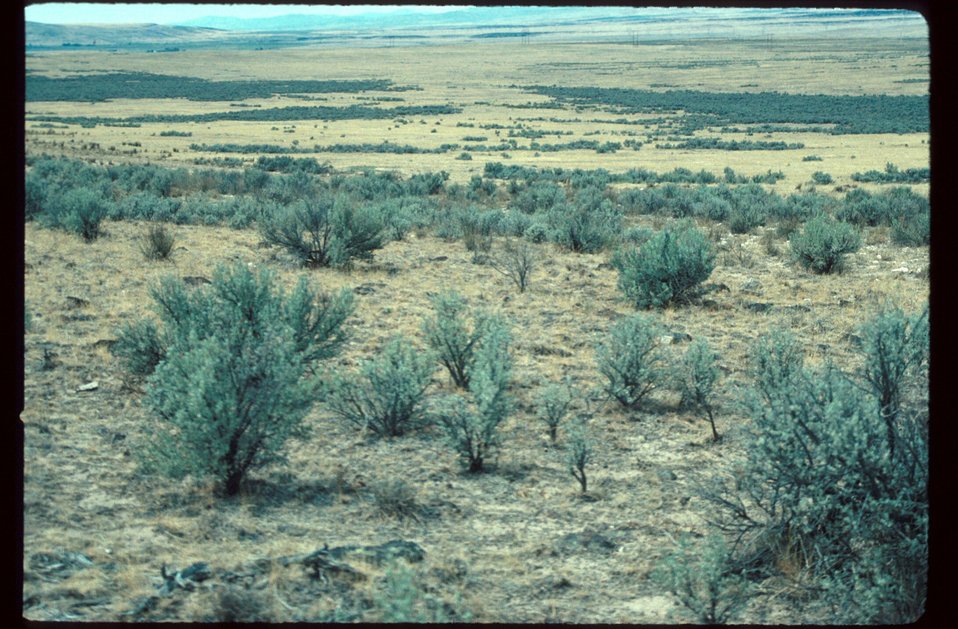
Range Restoration Project